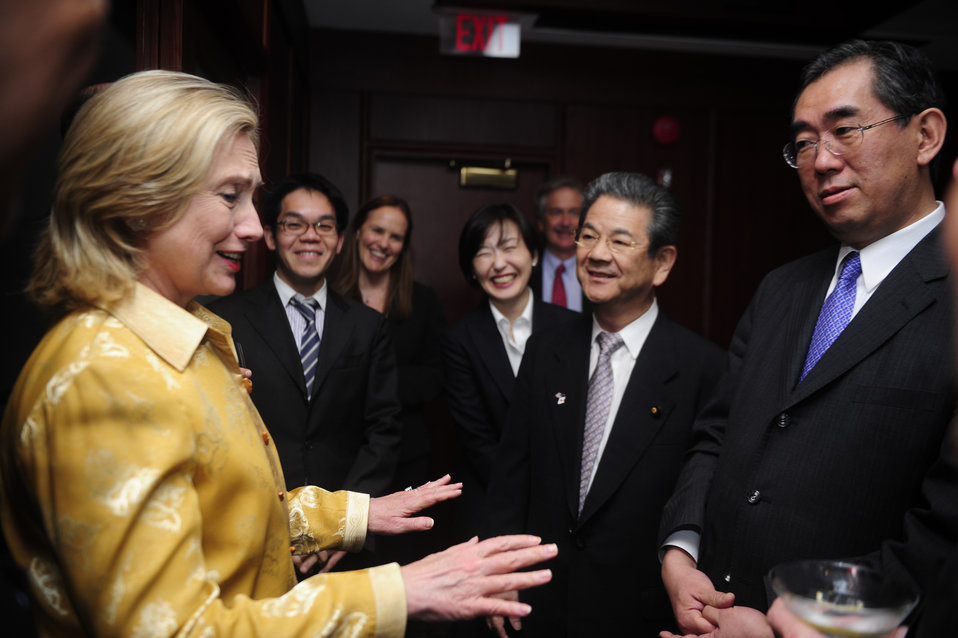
Secretary Clinton Speaks With Secretary Gates and Japense Ministers Matsumoto and Kitazawa

U.S. Secretary of State Hillary Rodham Clinton drops by a dinner hosted by U.S. Secretary of Defense Robert Gates in honor of Japanese Foreign Minister Matsumoto and Japanese Defense Minister Kitazawa in Crystal City, Virginia, on June 20, 2011.